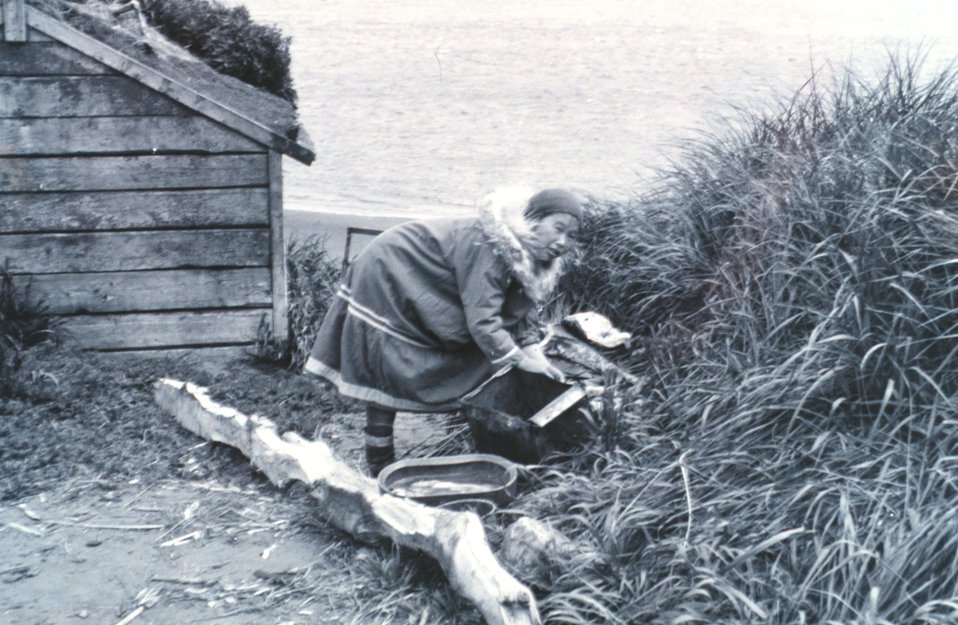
Eskimo woman stringing fish to dry. F&WS B-60220.